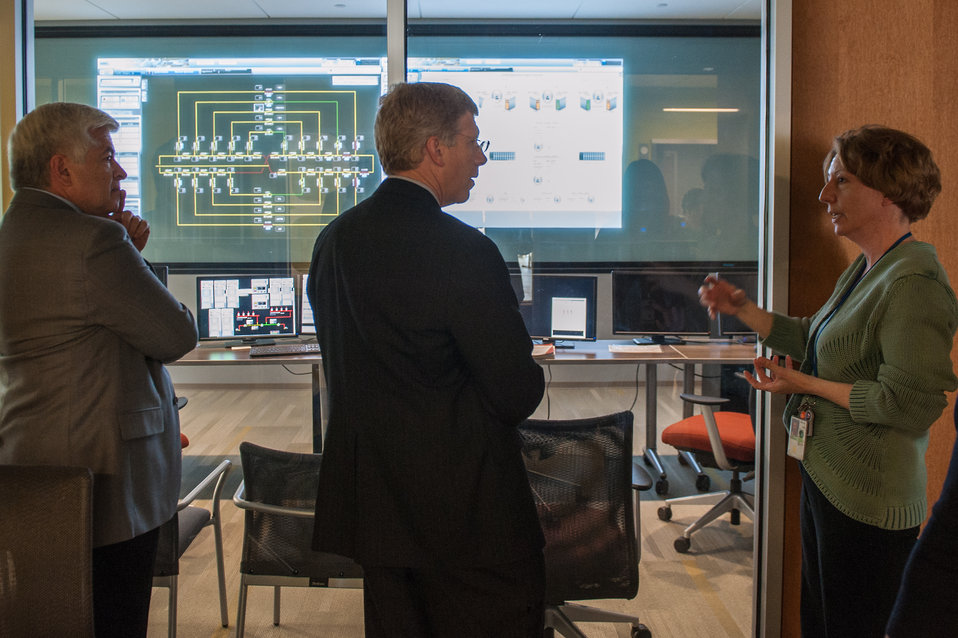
Acting Secretary Daniel Poneman, U.S. Department of Energy, control center ESIF

April 19, 2013- L-R, NREL Director Dan Arvizu and Acting Secretary Daniel Poneman, U.S. Department of Energy and ESIF Manager Carolyn Elam visit the ESIF control center during a tour of the Energy Systems Integration Facility (ESIF) at the National Renewable Energy Laboratory (NREL) in Golden, Colorado.